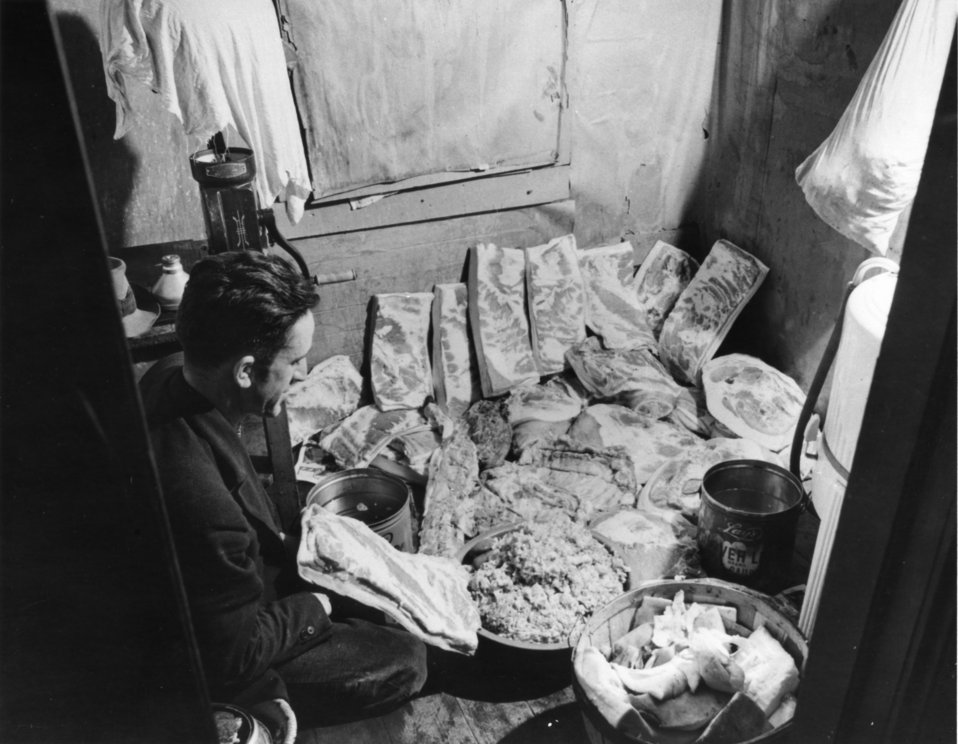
Early settlers at Oak Ridge